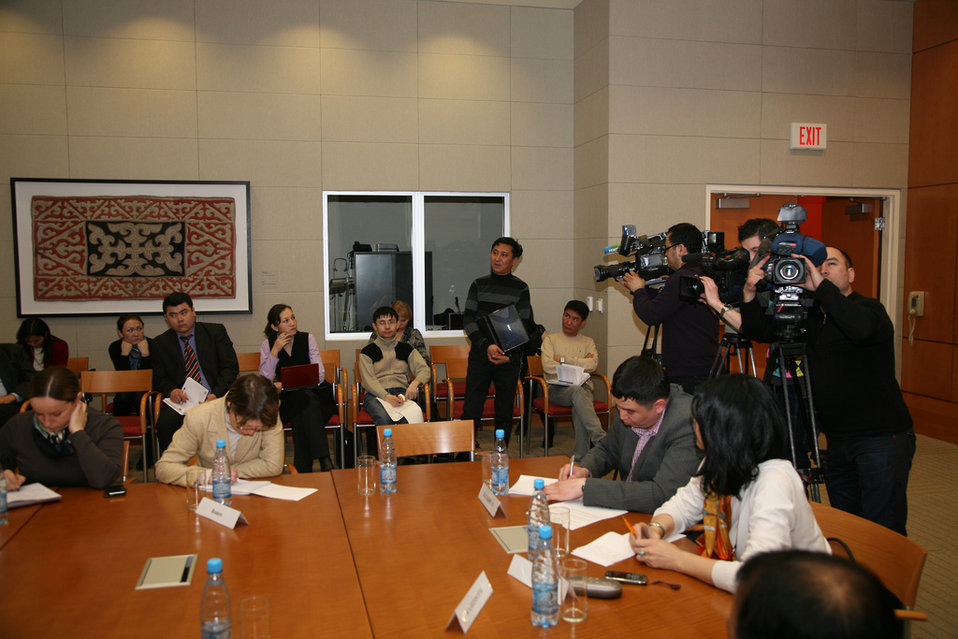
Members of the Press Participate in a Media Roundtable With Assistant Secretary Blake

Participants in the Media Roundtable speak with Assistant Secretary of State for South and Central Asian Affairs Robert O. Blake, Jr., at the the U.S. Embassy in Kazakhstan in Astana, on March 25, 2011.